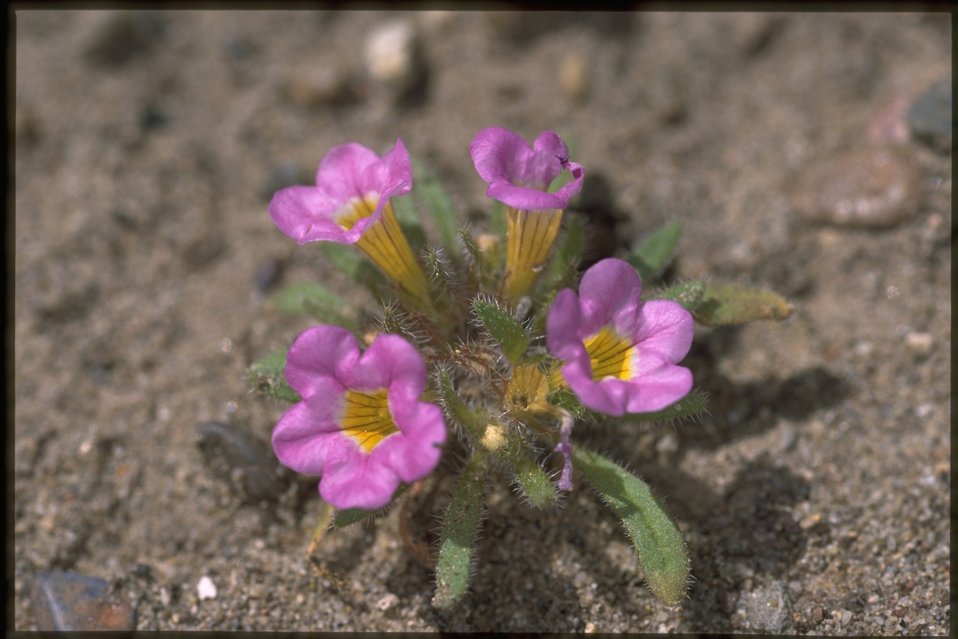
Medium shot of unidentified wildflower.